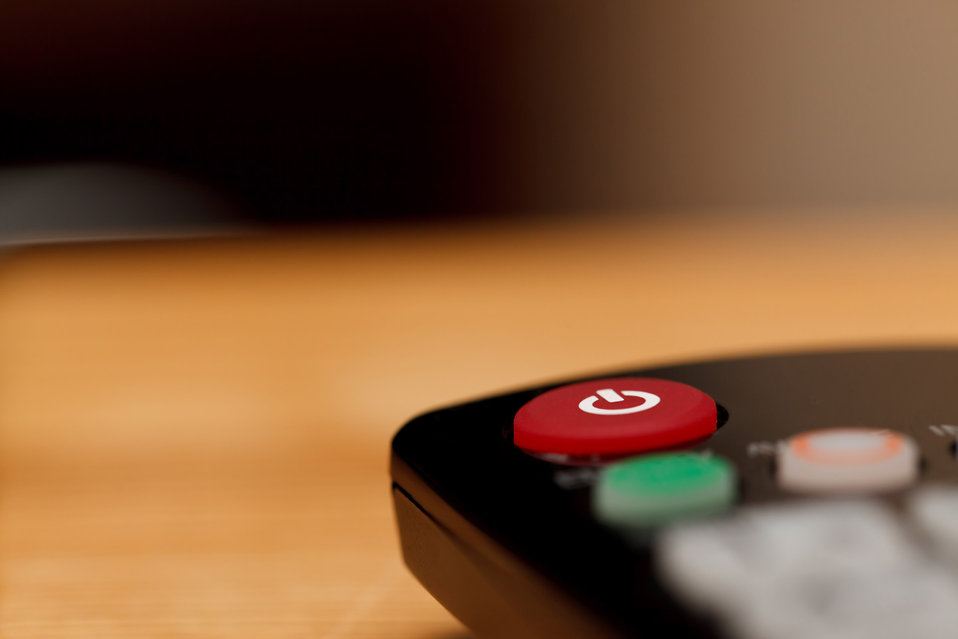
Power button on tv remote

Power button on remote control.